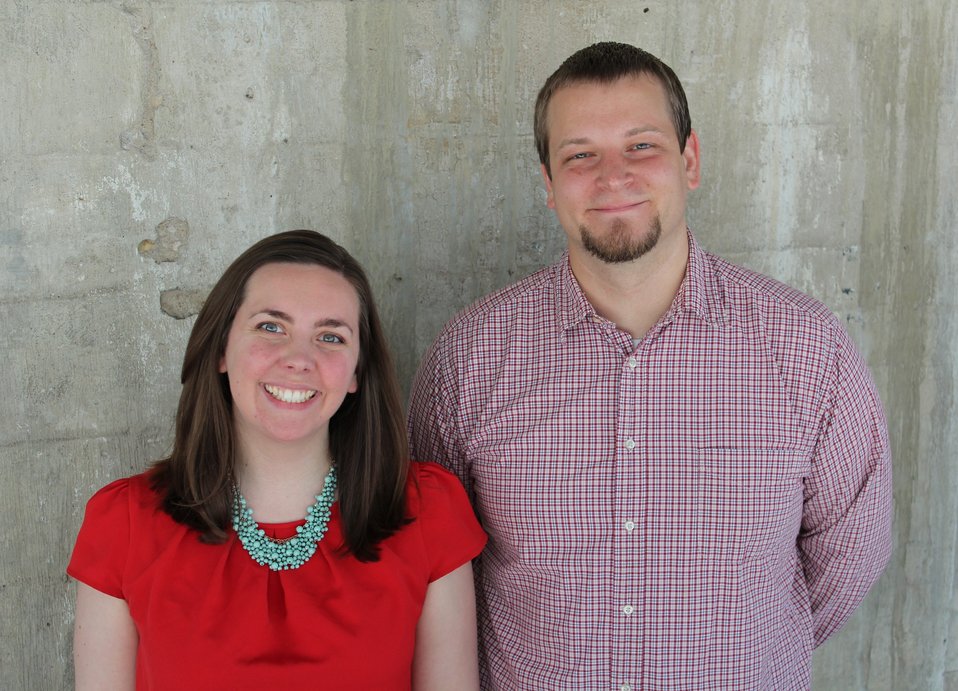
RMKC Archives 2014 Archivist's Award winners Elizabeth Burnes and Jake Ersland; Location: National Archives at Kansas City, Kansas City, MO